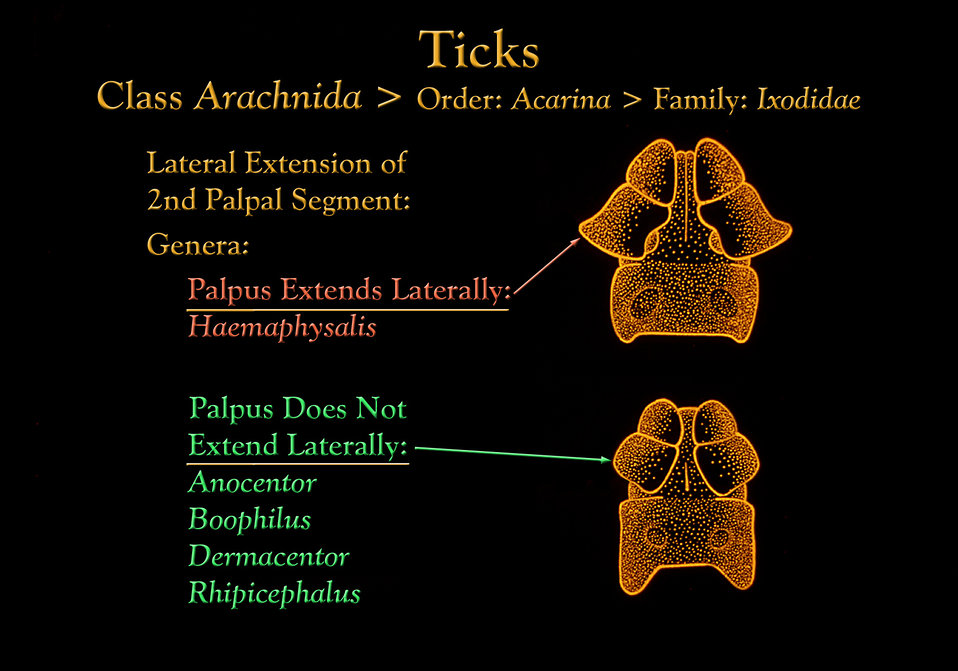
This drawing depicts the differently shaped 2nd palpal segments found in various genera of Ixodidae hard ticks.